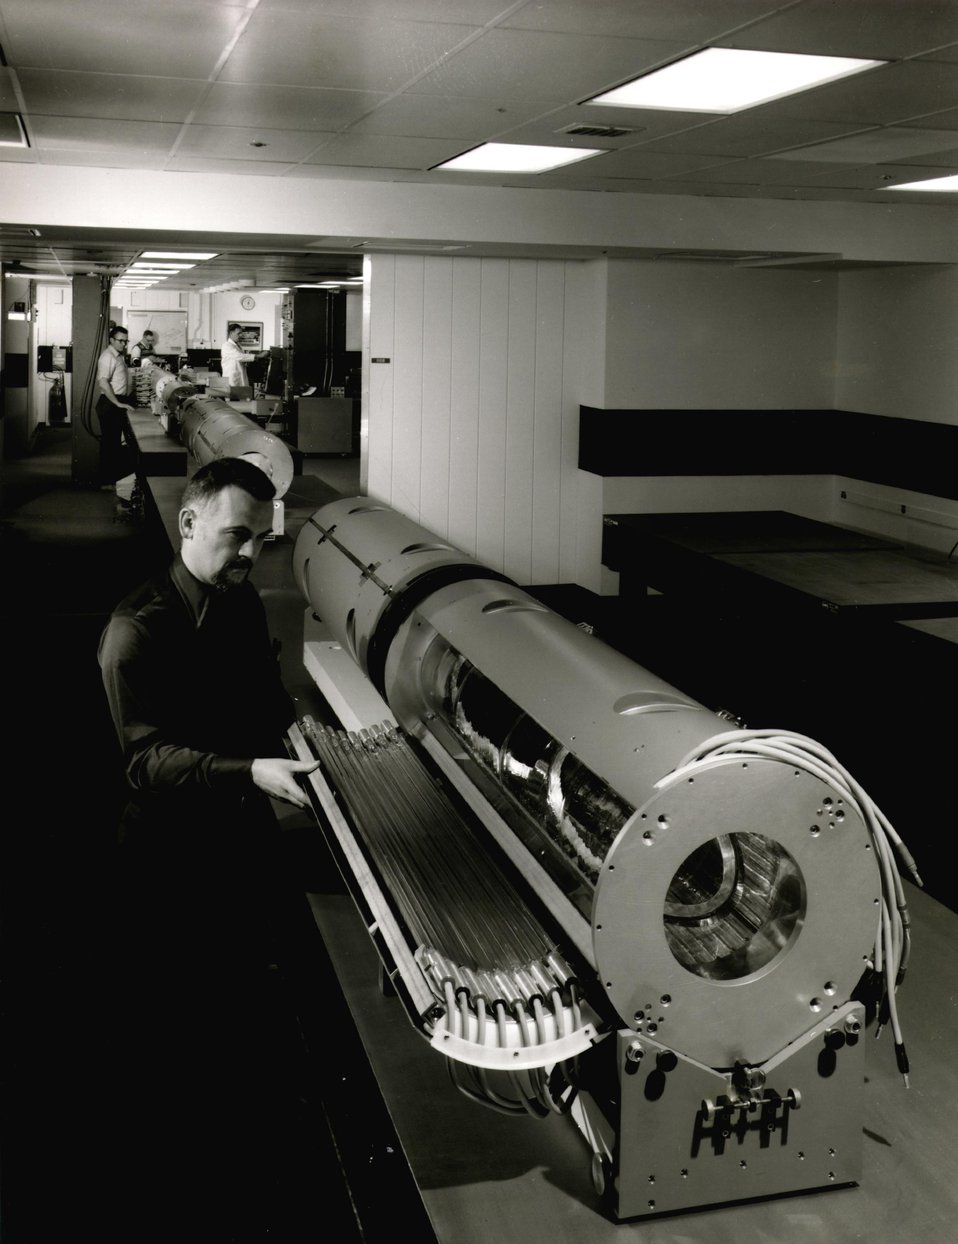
The neodymium laser chain--more than 100 feet long-- is capable of firing light pulses with an energy of 270 joules. Circa 1977.